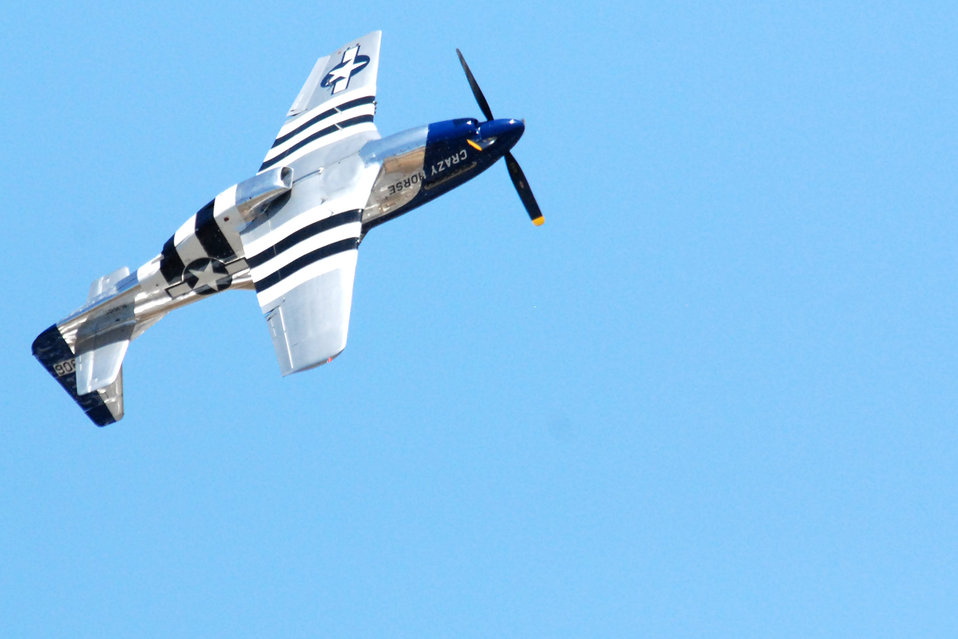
Heritage flight

A P-51 Mustang performs aerial maneuvers for a crowd May 1 at Eglin Air Force Base, Fla. The P-51 later flew in formation with an F-15 Eagle as part of a Heritage Flight. The P-51 was assigned to the Eglin AFB 33rd Fighter Wing from 1948 through 1950, and was a workhorse during World War II.